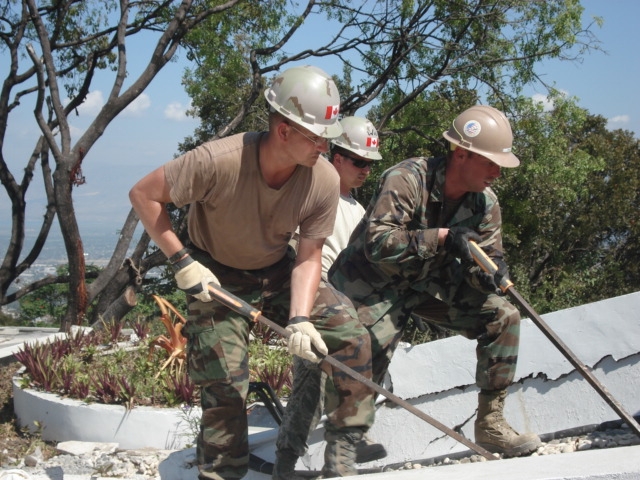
Air Force firefighters in Haiti dig through rubble, protect airfield resources

Master Sgt. Bradley Beaty,(forefront), works with a Navy Seebee and Canadian firefighters to clear material from a collapsed roof of a shopping area next to the Hotel Montana in Port-au-Prince, Haiti. Sergeant Beaty is a firefighter assigned to Scott Air Force Base, Ill.